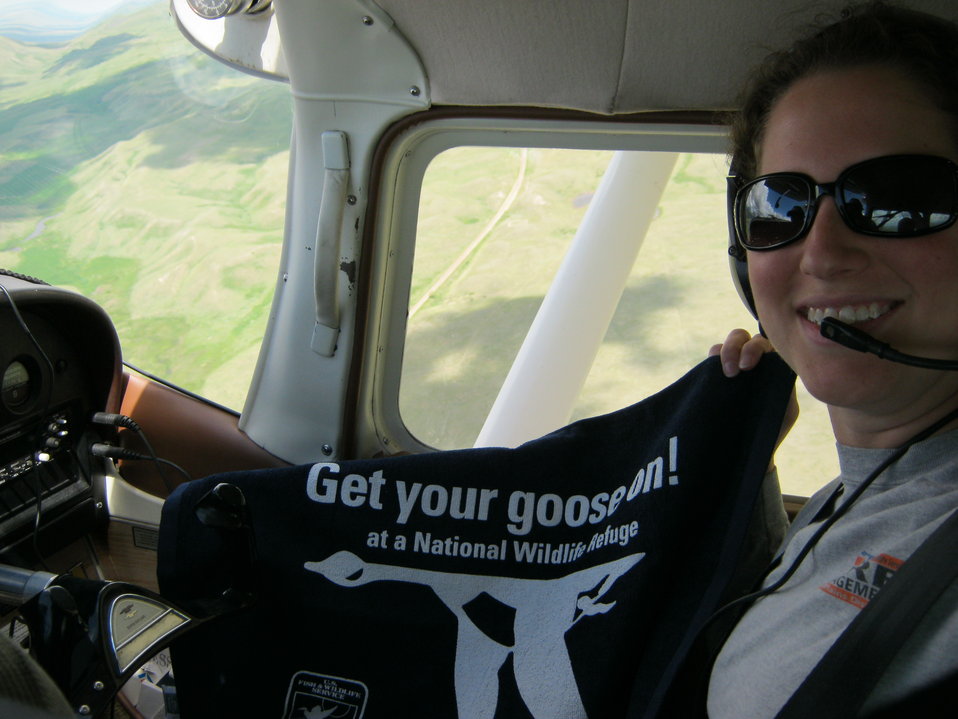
Get Your Goose On!

The goose takes flight at Benton Lake National Wildlife Refuge